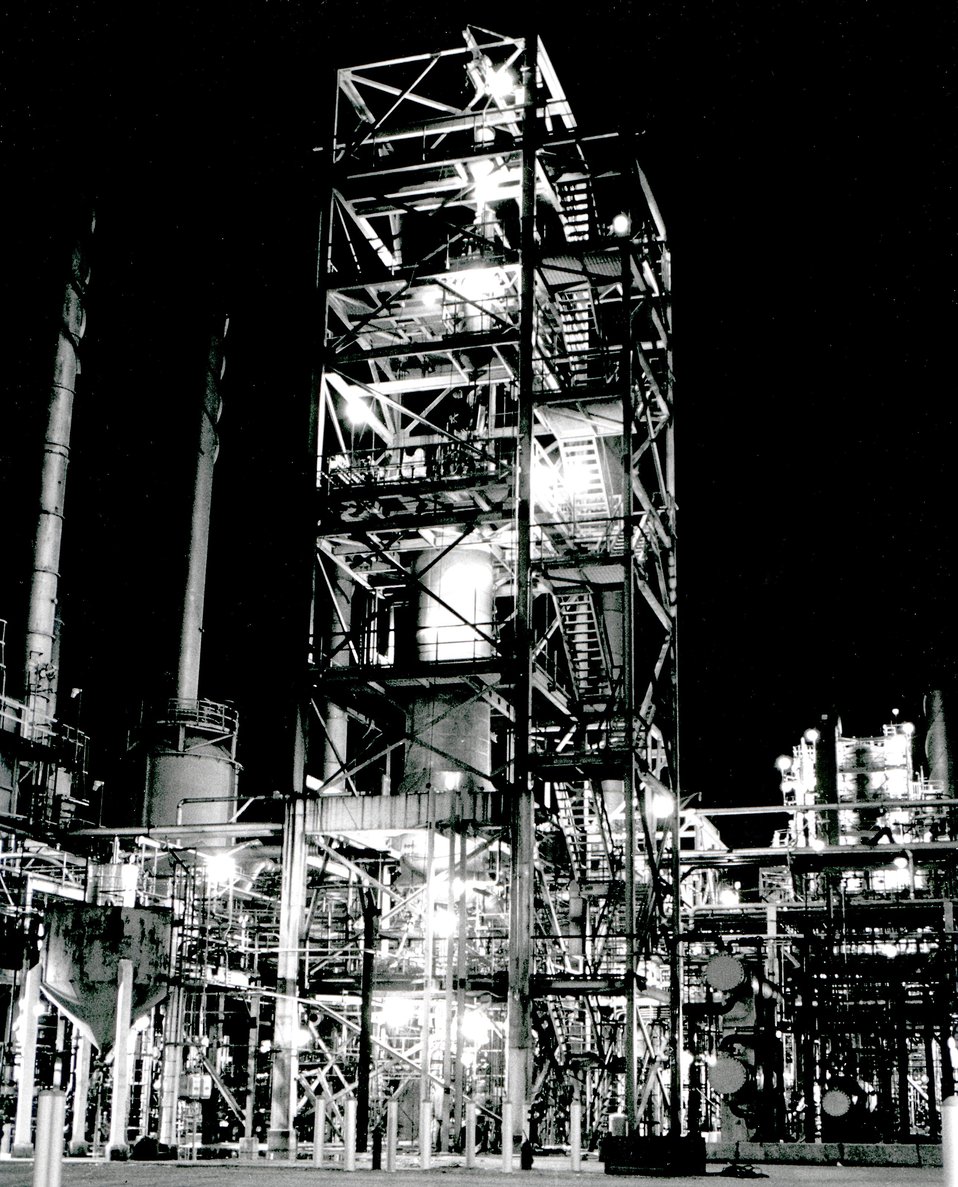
Construction progress at the H-Coal 600 tons per day Pilot Plant. Location of the plant at Catlettsburg, Kentucky, Circa 1980.